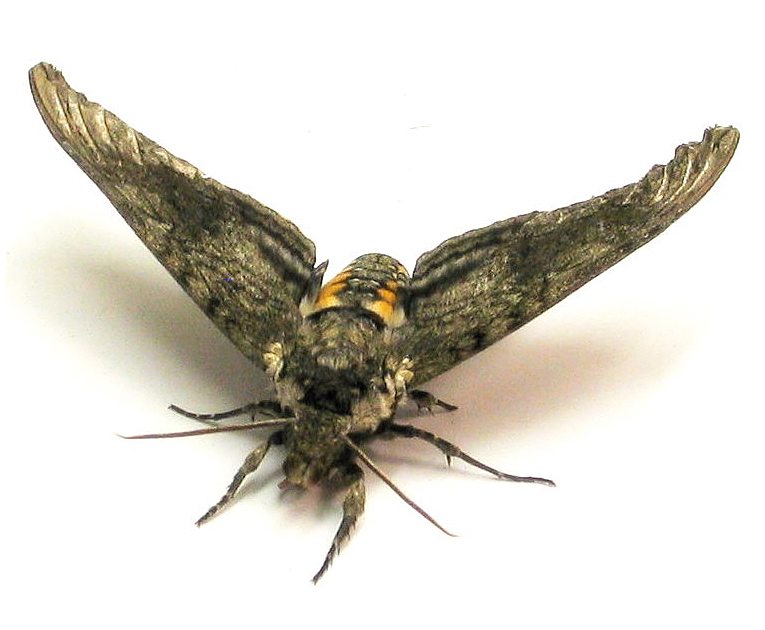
Moth

Researchers conditioned a moth to extend its proboscis in anticipation of a dollop of sucrose after being given a scent cue to study how the insect learned. Understanding how associations are built between stimuli and behavior can offer significant insights into how to build artificial systems to discriminate odors.